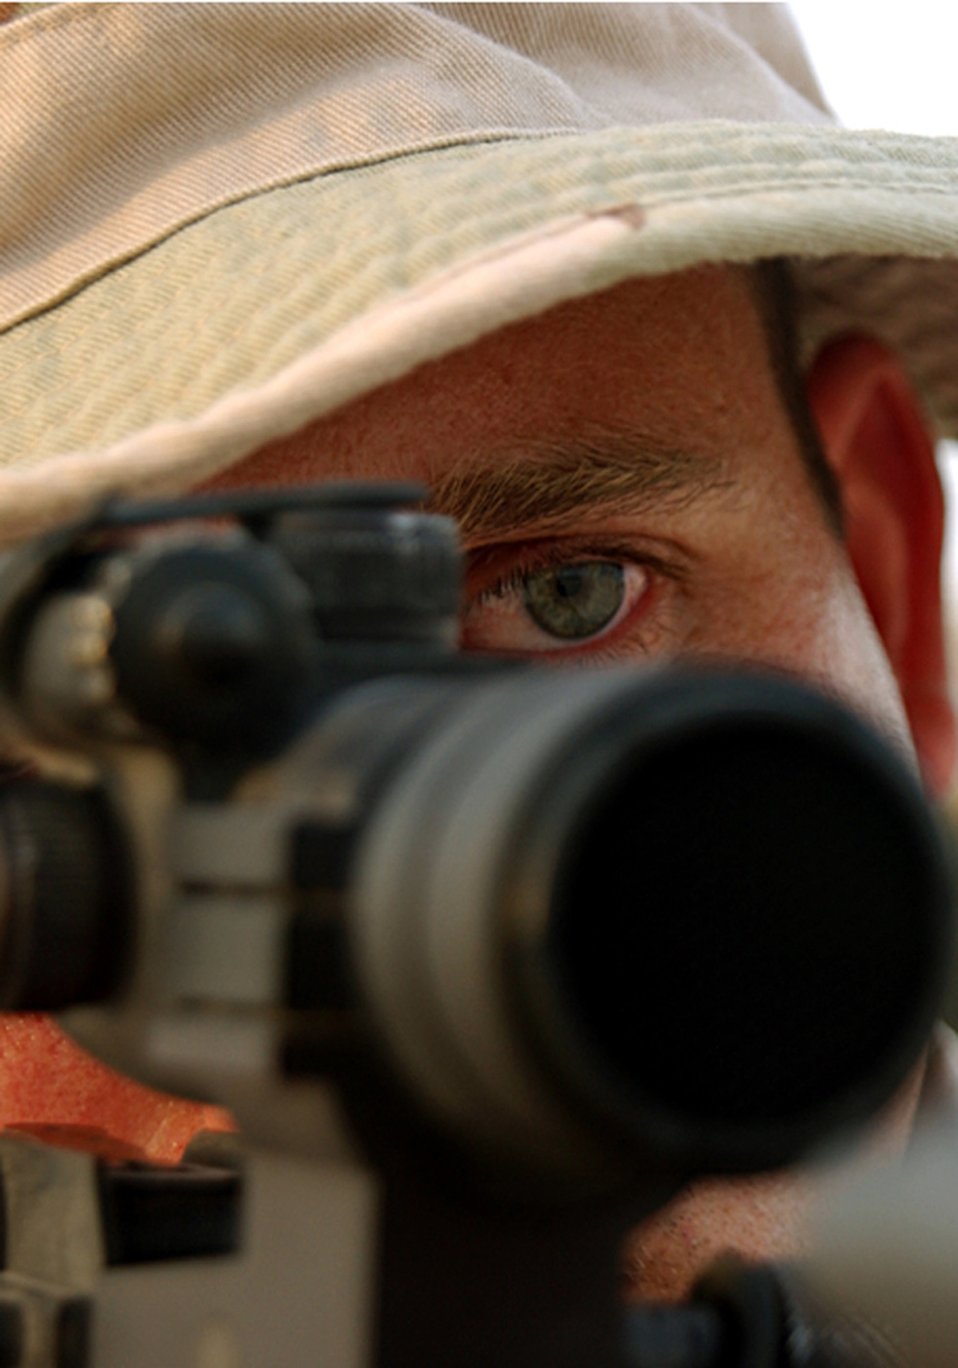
Security

SOUTHWEST ASIA (AFPN) -- Staff Sgt. Kyle Wagner represents one of this base's multiple layers of security. Sergeant Wagner is a 379th Expeditionary Security Forces Squadron team leader.